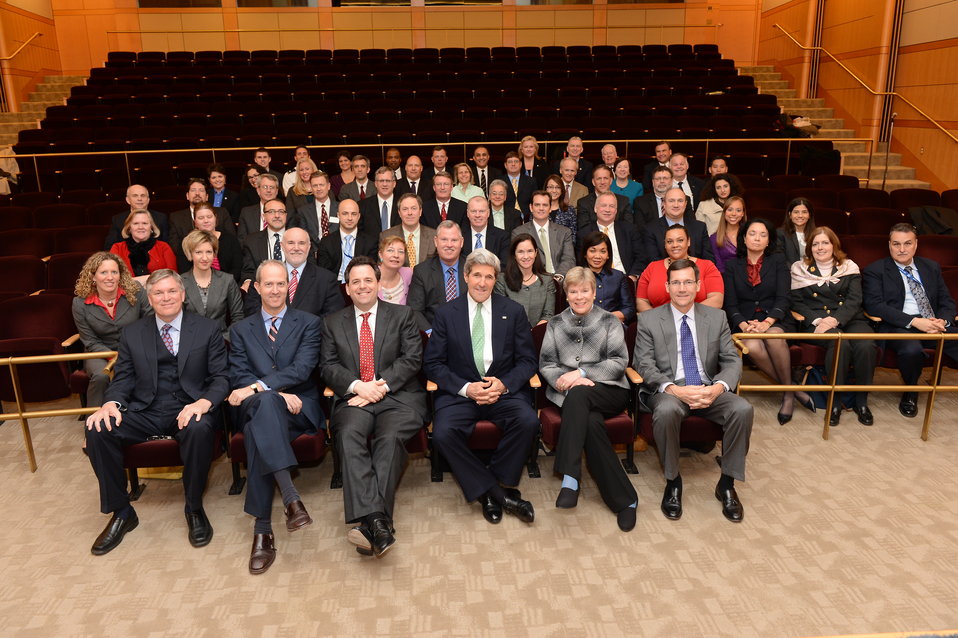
Secretary Kerry Poses for a Photo at the Foreign Policy Advisor Conference

U.S. Secretary of State John Kerry poses for a photo the Foreign Policy Advisor Conference at the U.S. Department of State in Washington, D.C., on March 14, 2013.